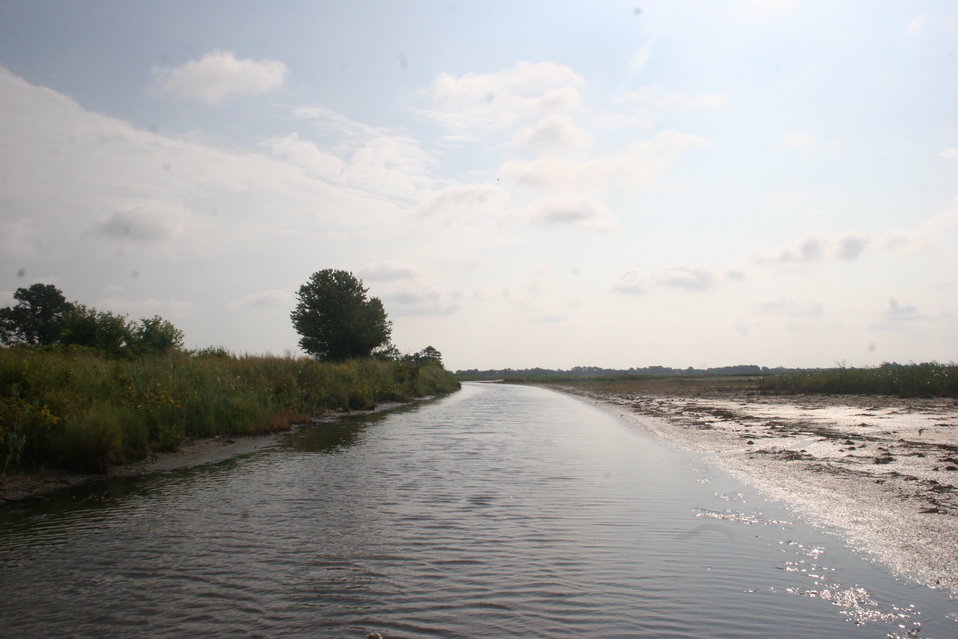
Prime Hook NWR